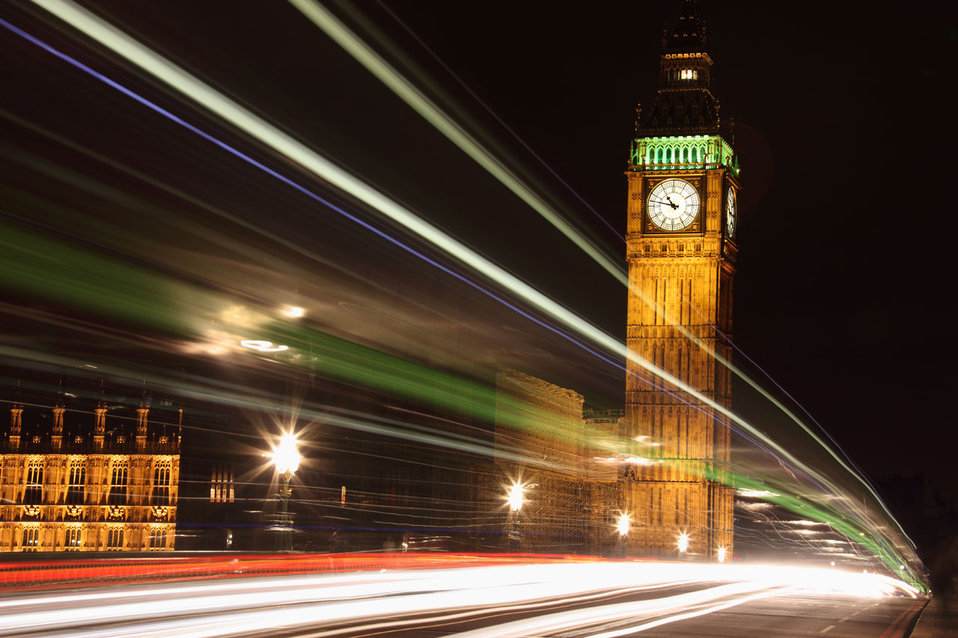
Big ben at night with light trails caused by two double deckers passing by.